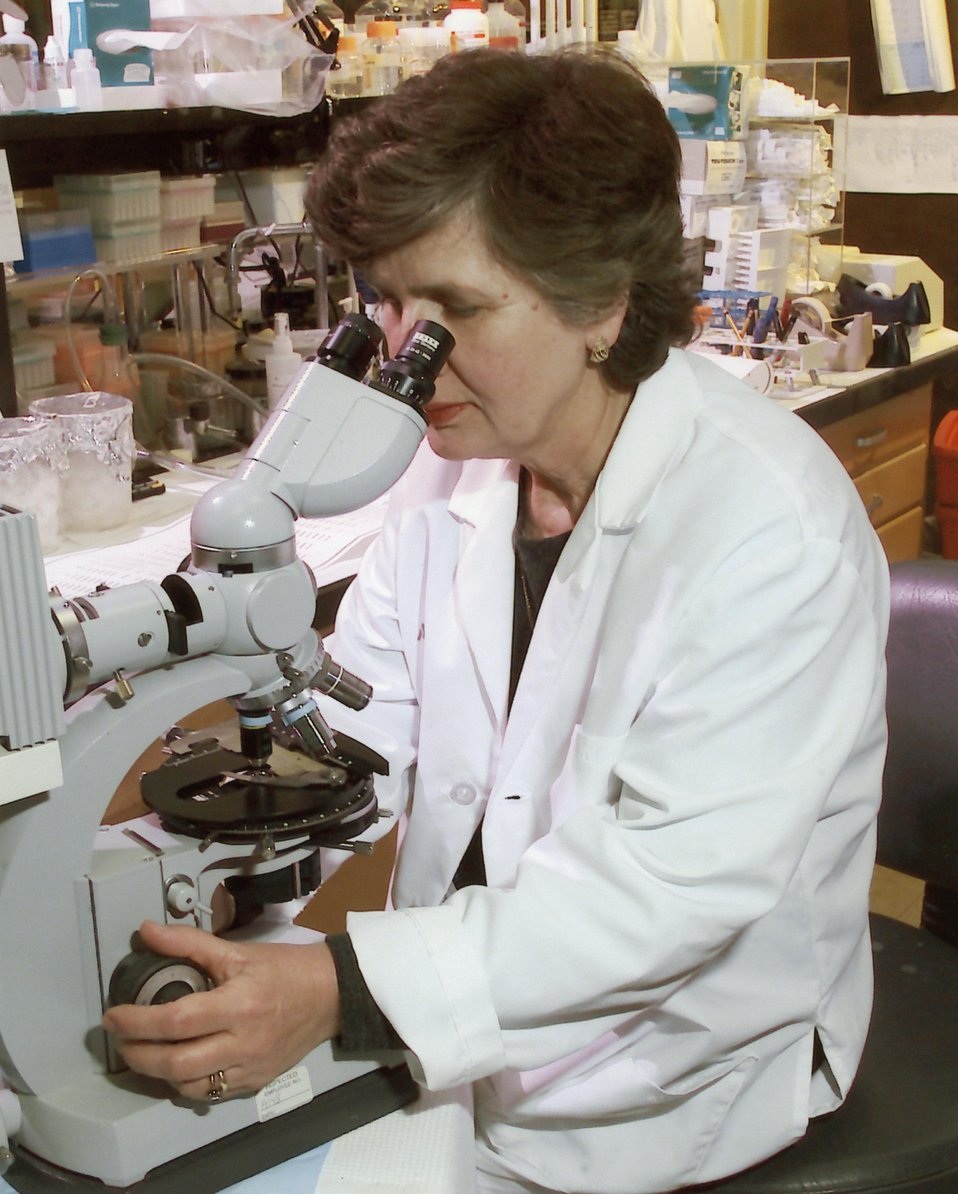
LLNL SCIENTIST EXAMINING SAMPLES IN MICROSCOPE.

LLNL SCIENTISTS ARE DEVELOPING DNA-BASED SIGNATURES UNIQUE TO PATHOGENS (DISEASE CAUSING MICROBES) IN ORDER TO DETECT BIOLOGICAL AND CHEMICAL WARFARE AGENTS. THIS PROGRAM IS DESIGNED TO IMPROVE RESPONSE CAPABILITY TO BIOLOGICAL AND CHEMICAL ATTACKS ON THE CIVILIAN POPULATION.